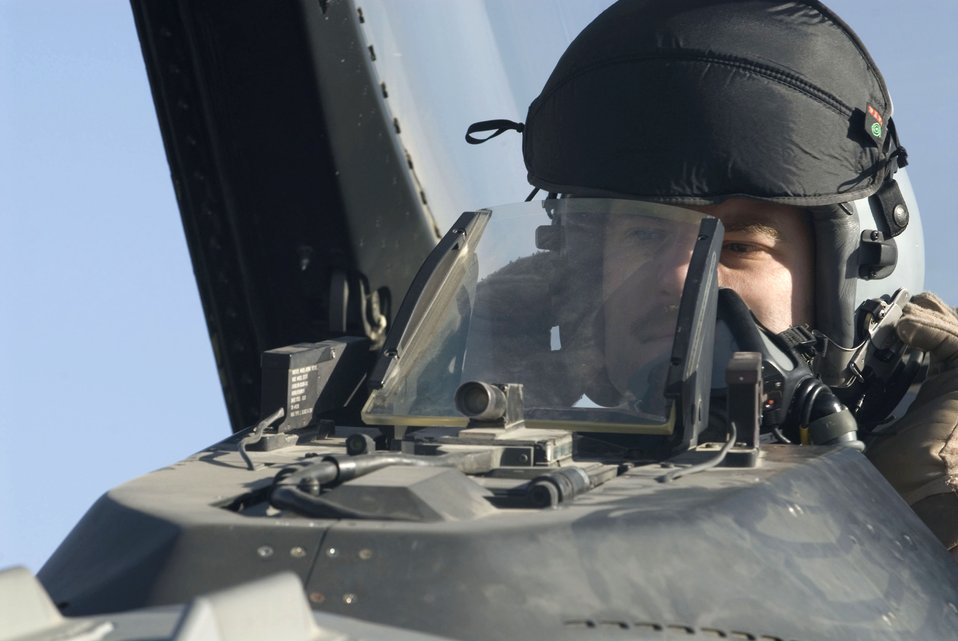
Show time!

Capt. Travis Keenan dons his helmet Dec. 17 at Balad Air Base, Iraq, in preparation for a combat mission. Captain Keenan, a 22nd Expeditionary Fighter Squadron fighter pilot, is deployed from Spangdahlem Air Base, Germany.